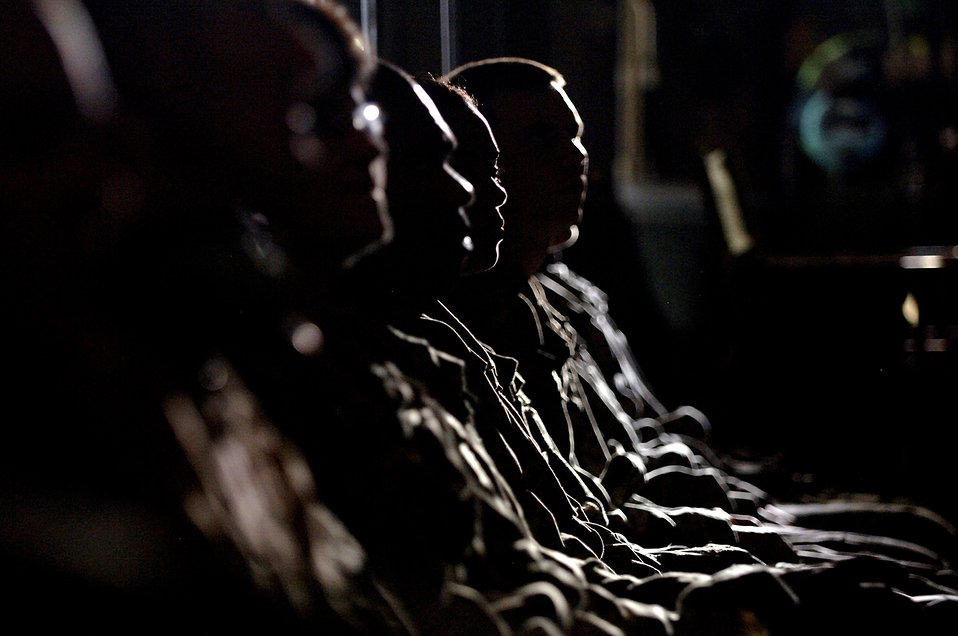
Airmen make appearance on 'Army Wives'

Airmen pose as Soldiers inside a C-17 Globemaster III for a taping of the television show